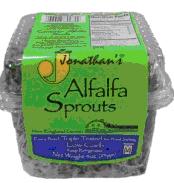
RECALLED - Sprouts

April 19, 2011 - Product Recall - Jonathans Sprouts Recalls Alfalfa Sprouts Because Of Possible Health Risk.